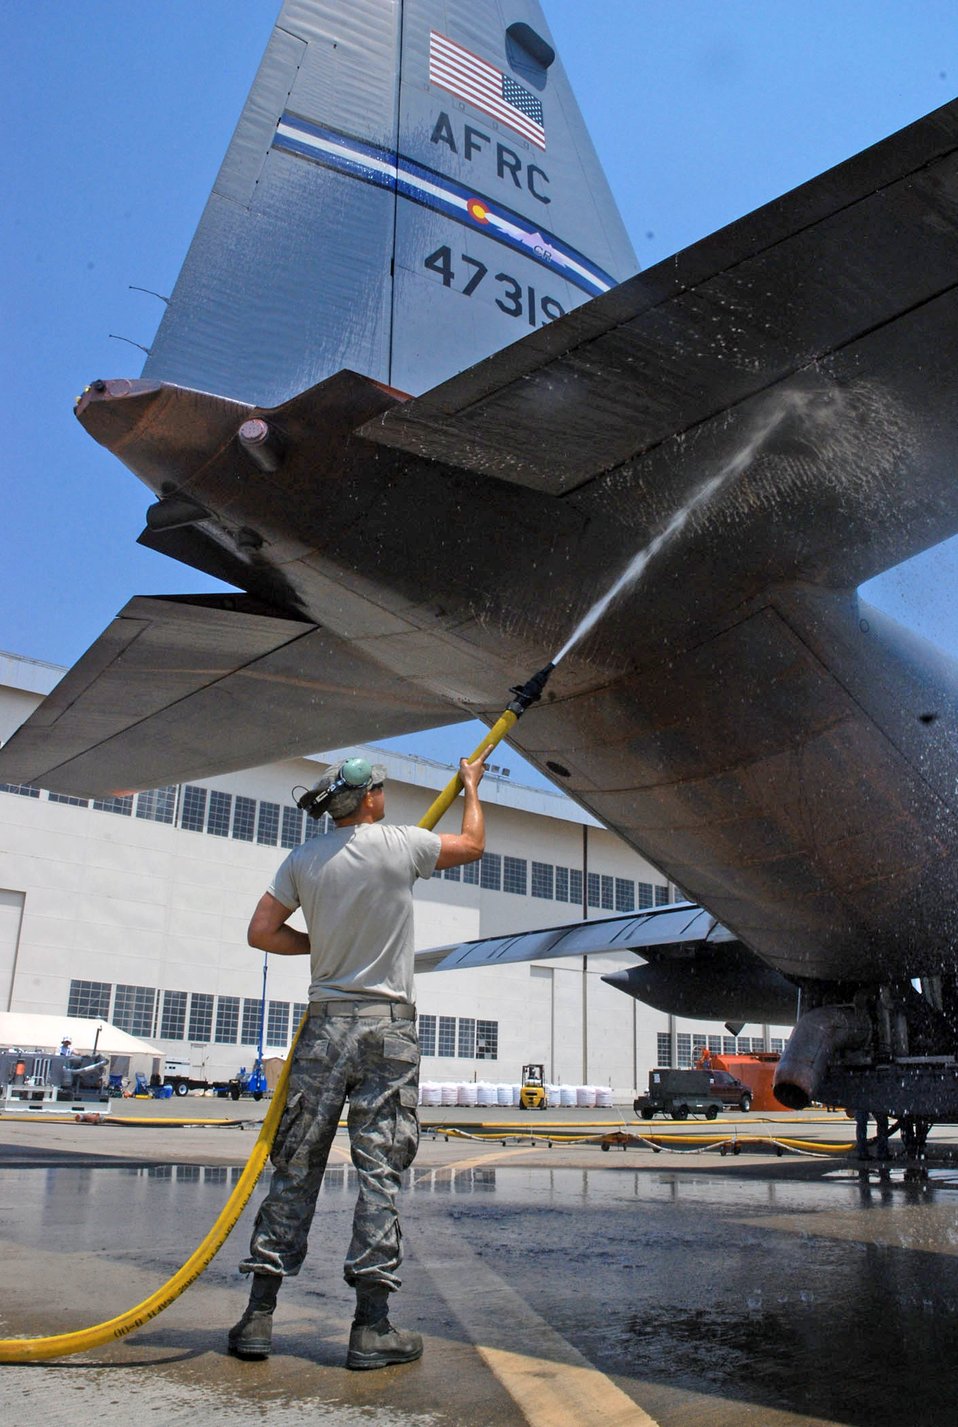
Third Reserve C-130 joins California wildfire fight

Staff Sgt. Josh Crooks washes down the ramp of a C-130 Hercules prior to a firefighting mission June 29 at McClelland Airfield in Sacramento, Calif. Sergeant Crooks is a reservist with the 302nd Airlift Wing from Peterson Air Force Base, Colo., and assigned to the 302nd Air Expeditionary Group fighting the Corral and Piute wildfires fires near the California capital.